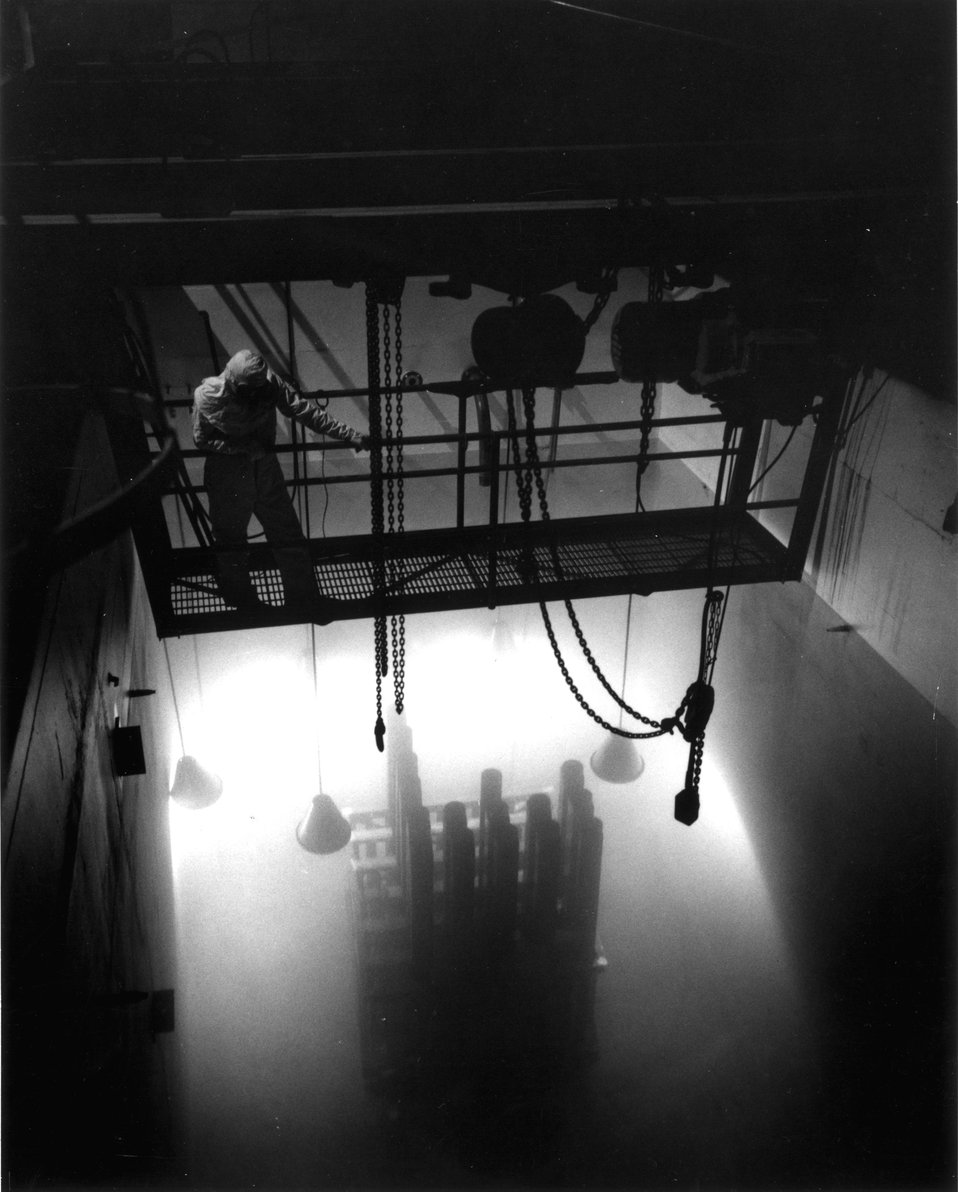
Fuel elements from the Shippingport Power Reactor were stored underwater in one of the Hanford Works chemical processing buildings. c. 1968